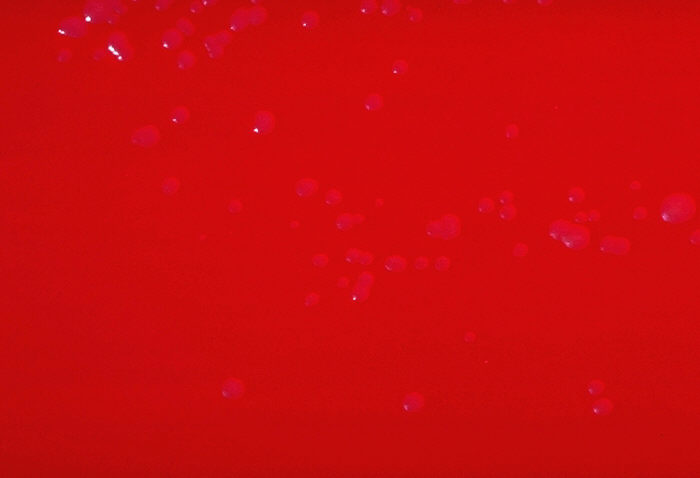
Blood agar plate culture of Flavobacterium odoratum.